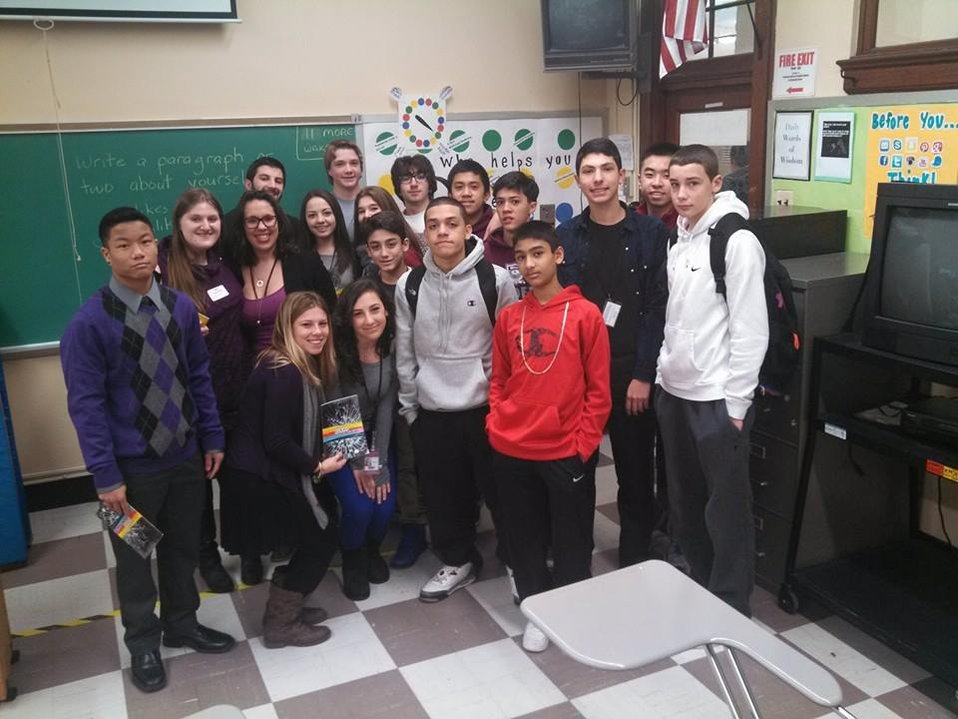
Nutley High School